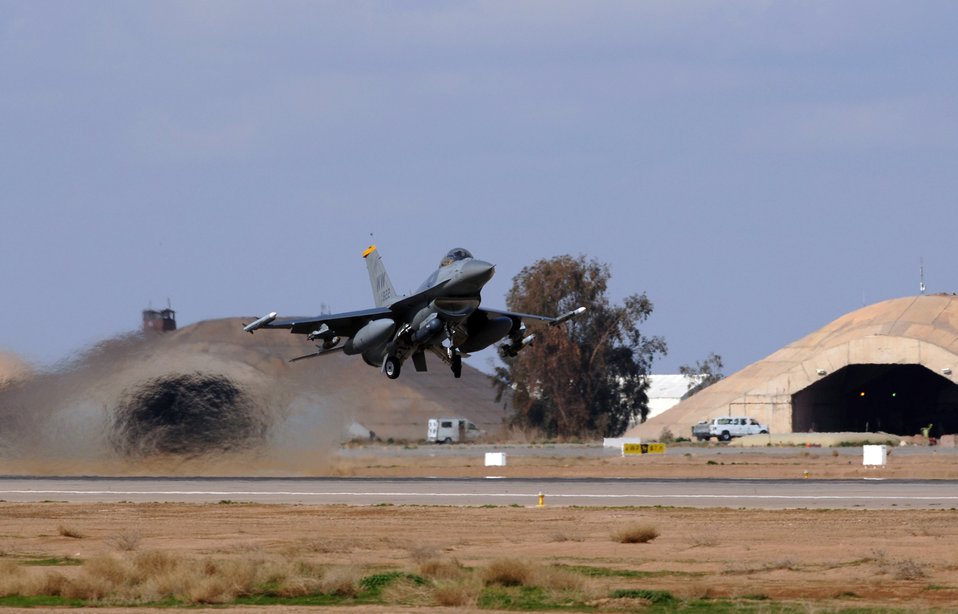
CENTAF Airpower Summary for March 9

An F-16 Fighting Falcon takes off from Balad Air Base, Iraq, Feb. 16. Airman there have experienced a surge in flight operations recently due to a greater need for air support for the increased number of U.S. Soldiers on the ground in Iraq.